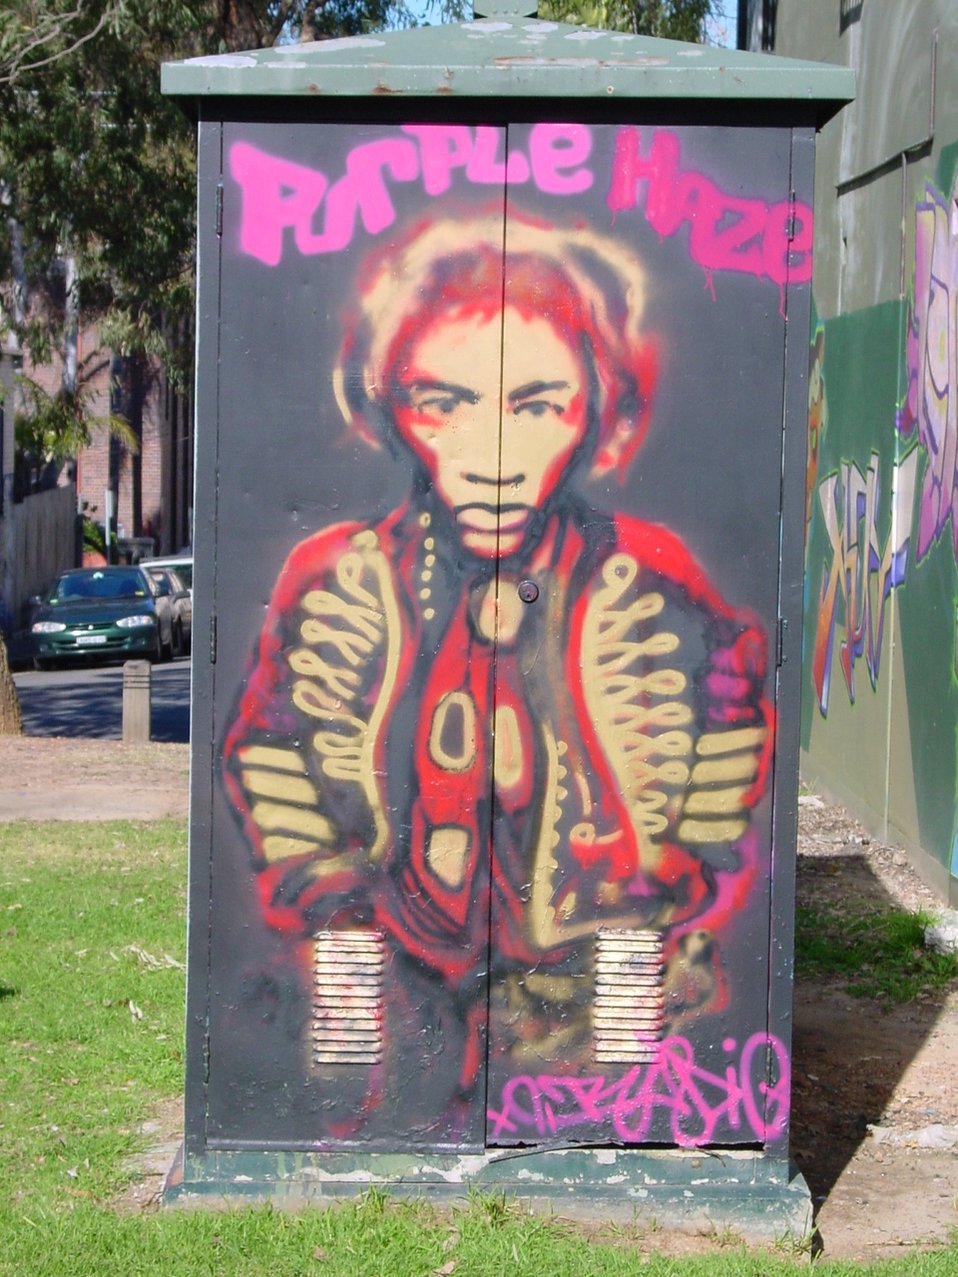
Jimi Hendrix 'Purple Haze' graffiti, Camperdown Memorial Rest Park; May 2005